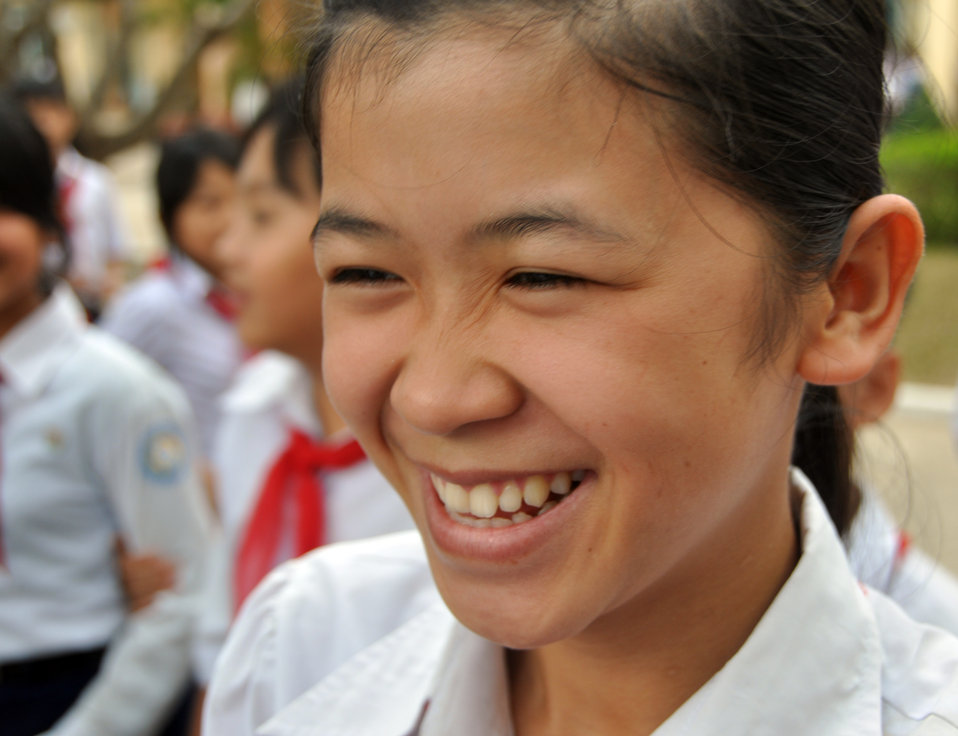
USAID and partners support eyecare, glasses, in Kon Tum

Eyeglasses examination at Luong The Vinh School, Kon Tum Province